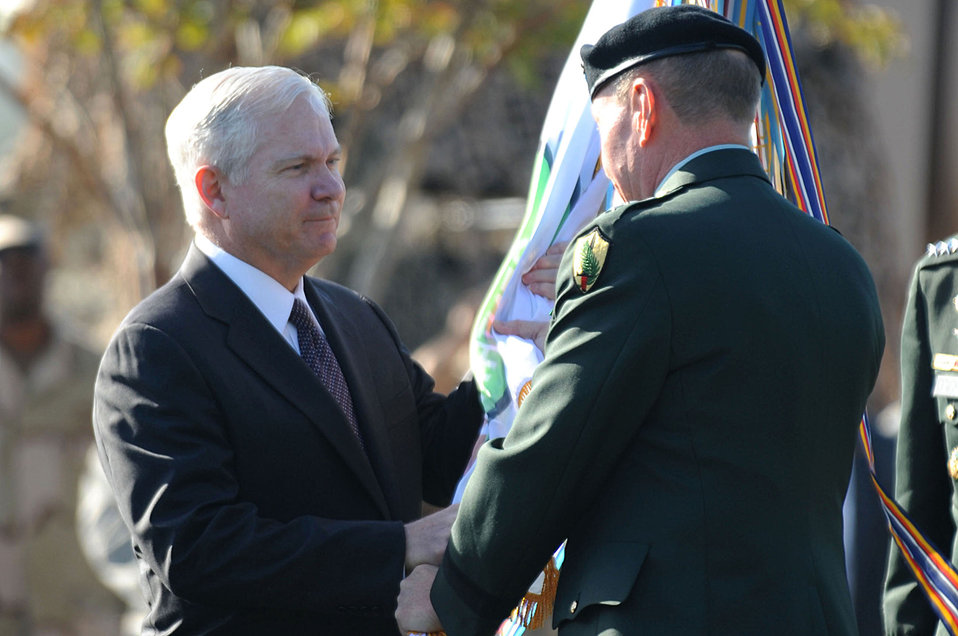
USCENTCOM Change of Command

Army Gen. David H. Petraeus accepts the U. S. Central Command flag from Secretary of Defense Robert M. Gates during the U.S. CENTCOM change of command ceremony Oct. 31 at MacDill Air Force Base, Fla. During the ceremony, General Petraeus assumed command of CENTCOM from acting commander Army Lt. Gen. Martin E. Dempsey.